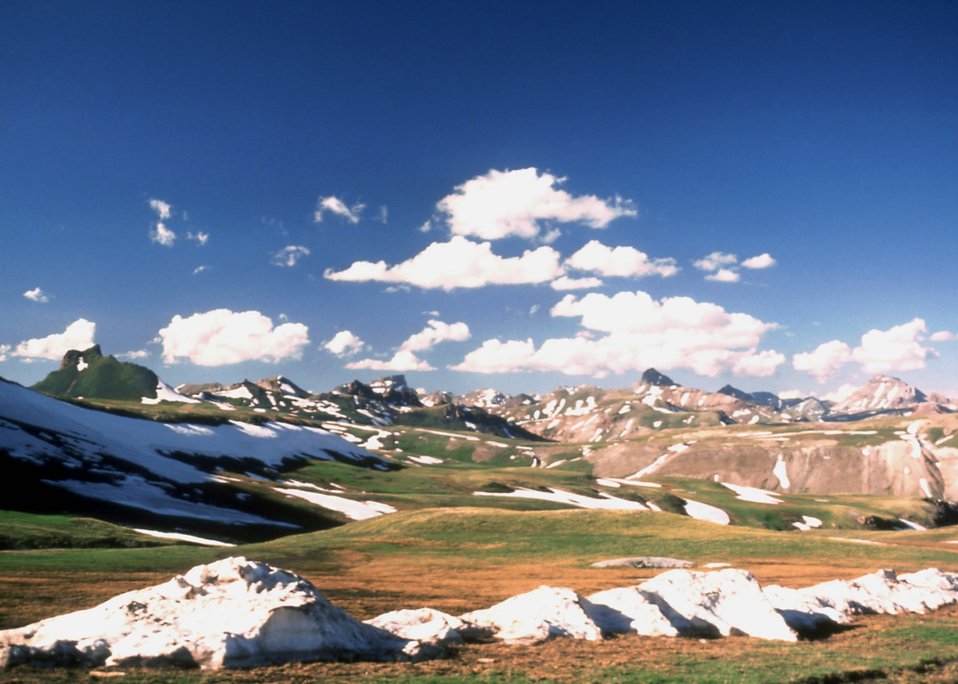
Mountian Scenic Spring